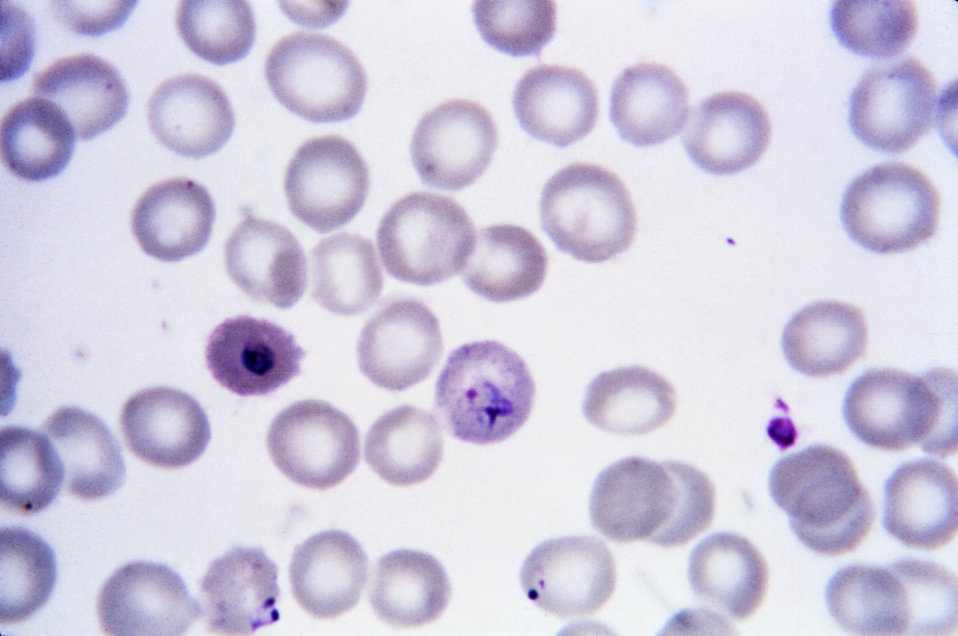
This thin film Giemsa stained micrograph shows a ring-form P. falciparum trophozoite displaying basophilic stippling.